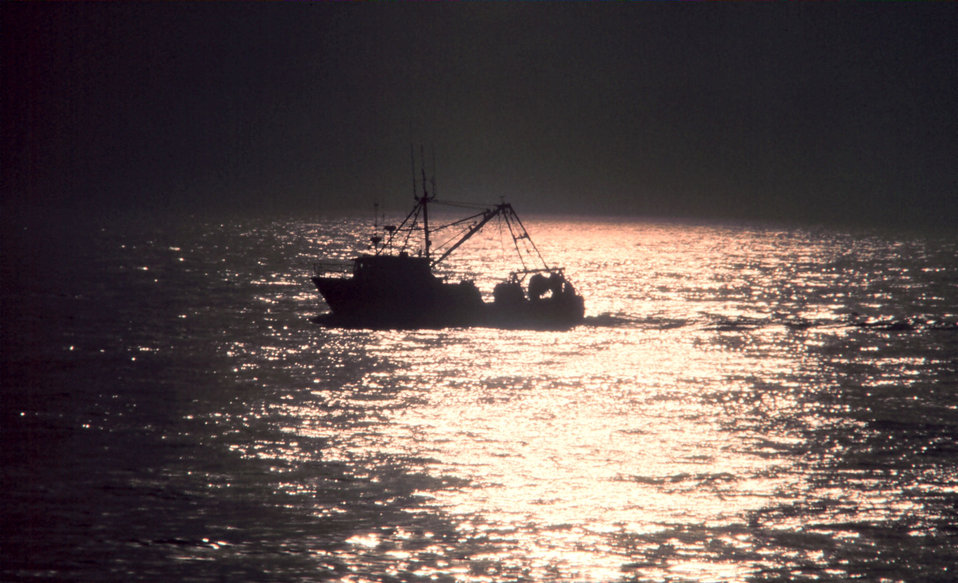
A small fishing boat caught in the sparkle of the late afternoon sun.